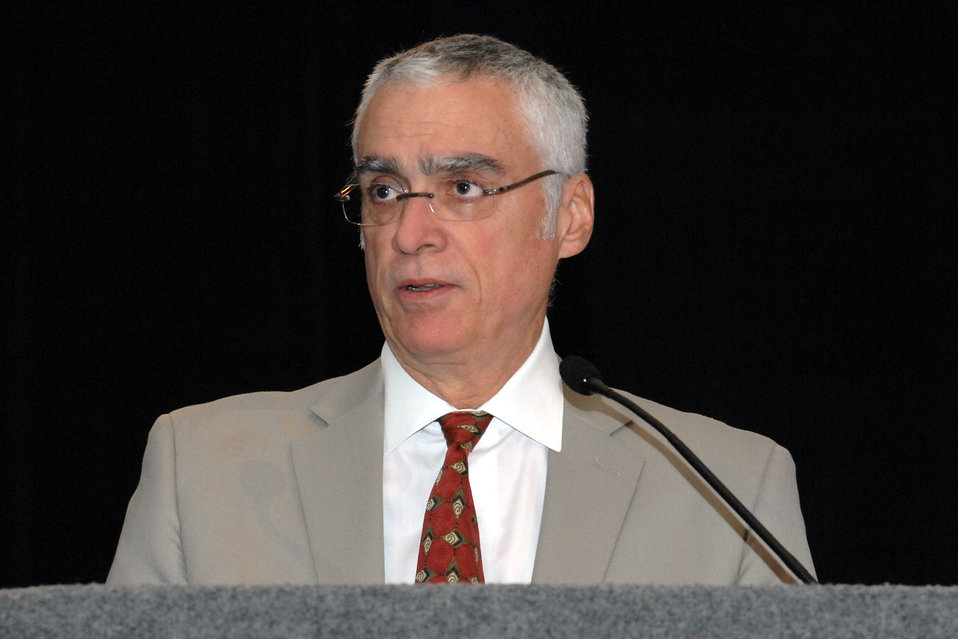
Deputy Administrator Perciasepe at Climate Change Summit

US EPA Deputy Administrator Bob Perciasepe speaks during a panel at the Southeast Florida Regional Climate Leadership Summit in Fort Lauderdale, Florida